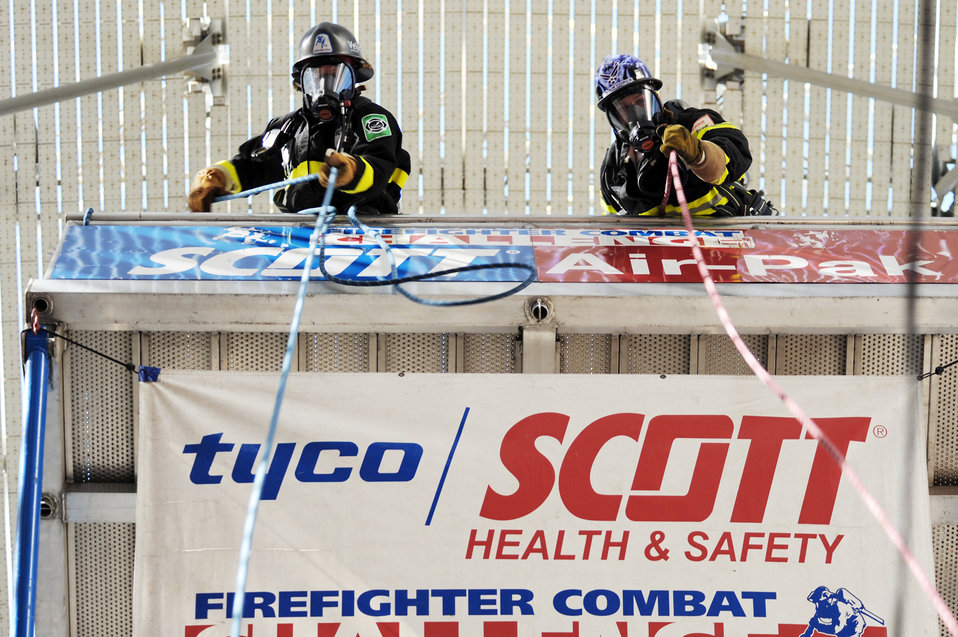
Airmen compete in 2009 Scott Firefighter Combat Challenge

Firefighters from all around the world compete in an individual firefighter event Nov. 17, 2009, at the 2009 Scott Firefighter Combat Challenge in Las Vegas.